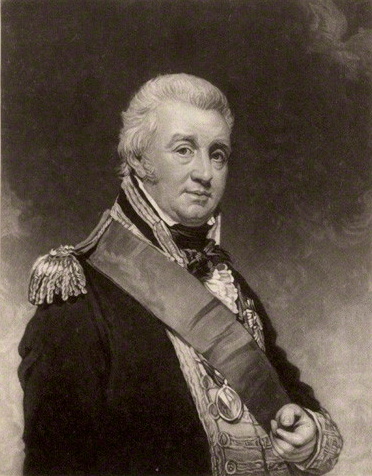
Alexander Cochrane